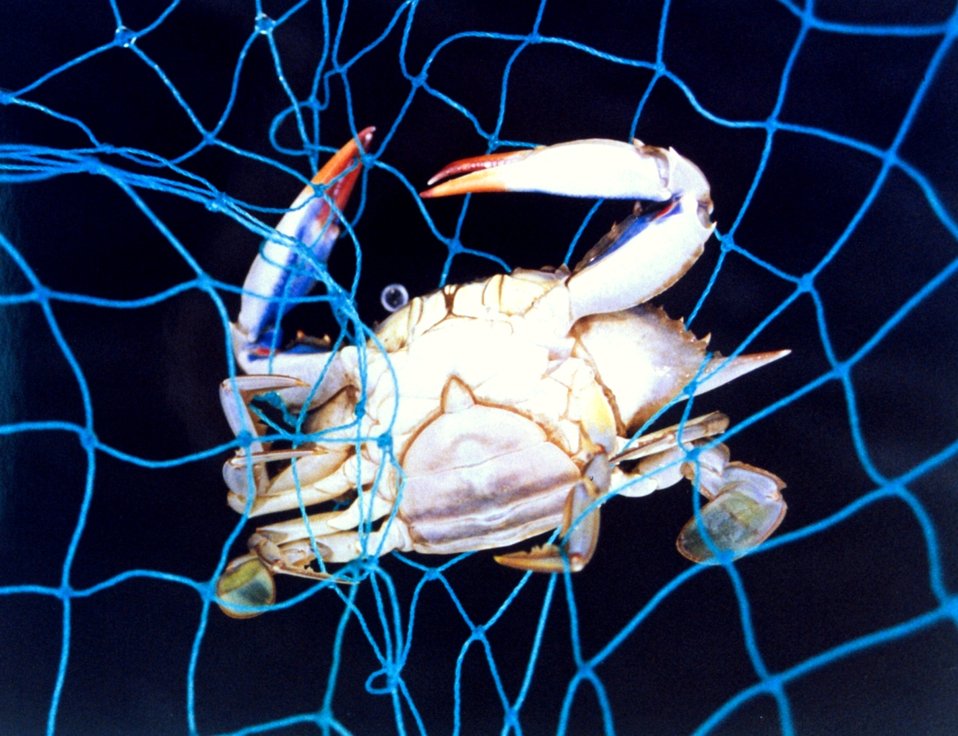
A mature blue crab, Callinectes sapidus, captured in a net.